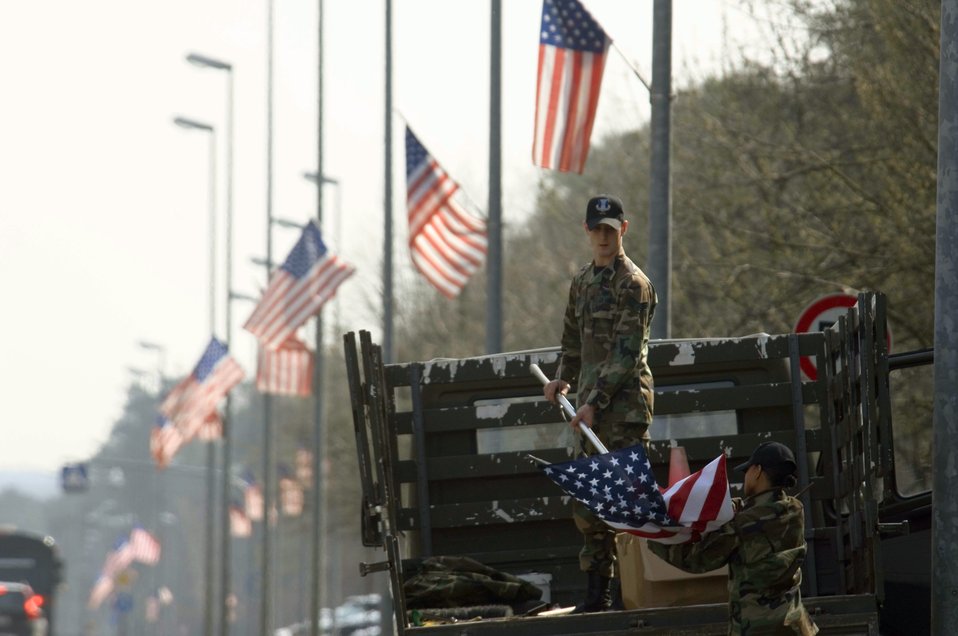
Posting the colors

Senior Airman Shawn Duffy helps Staff Sgt. Davidad Langley attach a new flag for posting on the main drive at Ramstein Air Base, Germany, on Wednesday, April 19, 2006. Officials replace older flags periodically as part of the installation excellence program. Airman Duffy is a land and mobile radio technician and Sergeant Langley is a base information manager; both are with the 435th Communication Squadron.